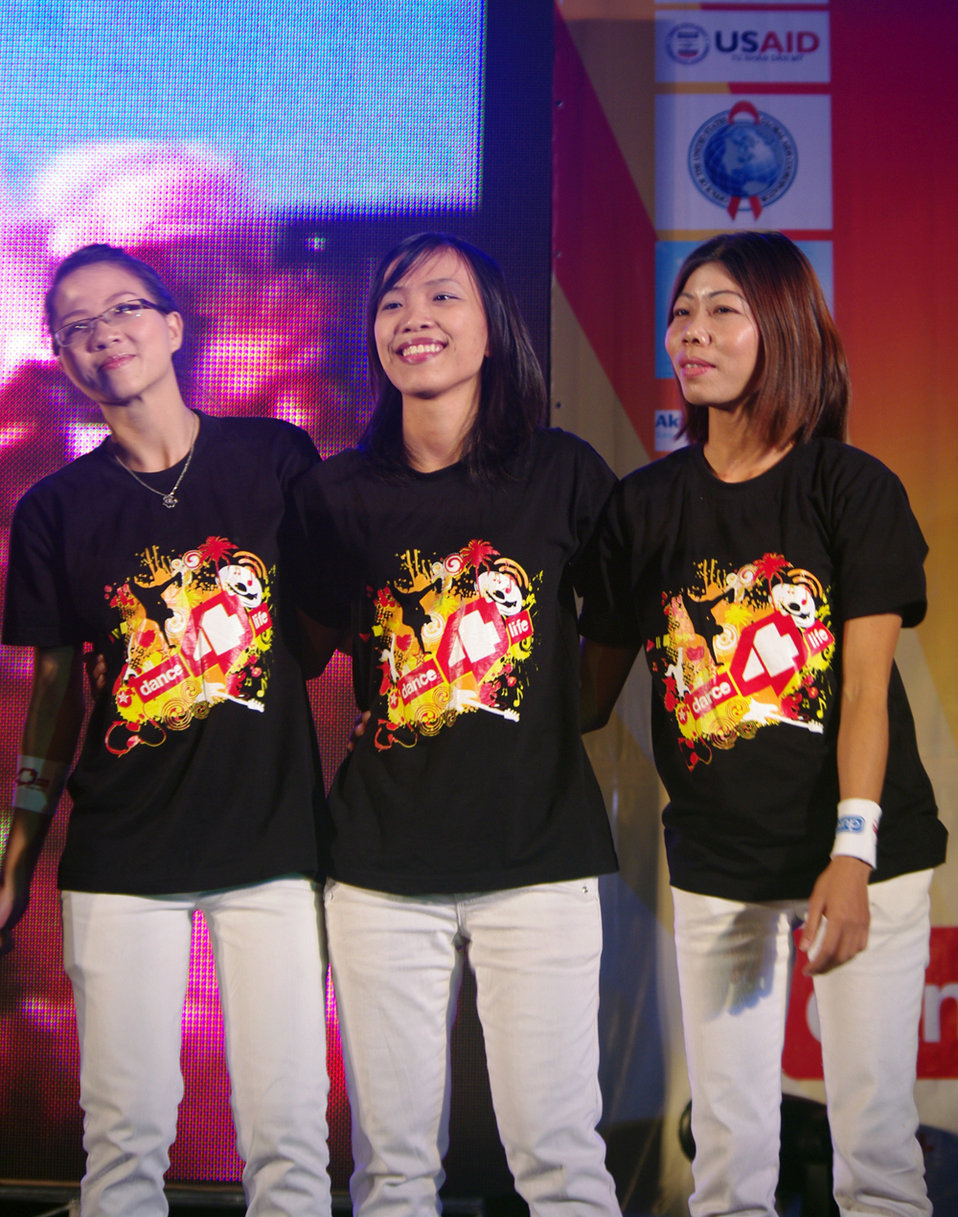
USAID supports dance4life to raise awareness of HIV and fight stigma in Vietnam RNyberg stage logo 1000